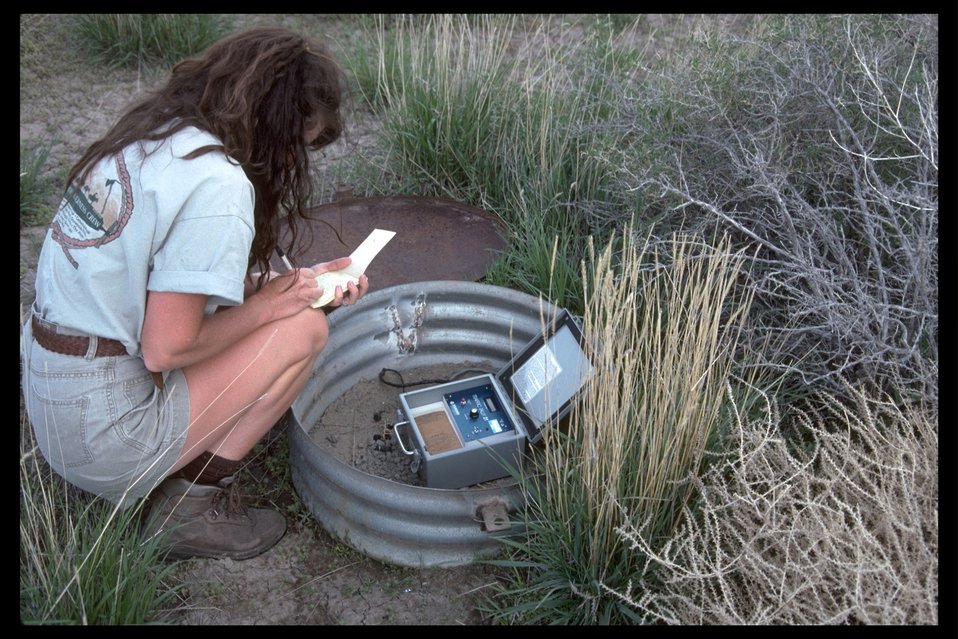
Mary Emerick checking traffic counter.